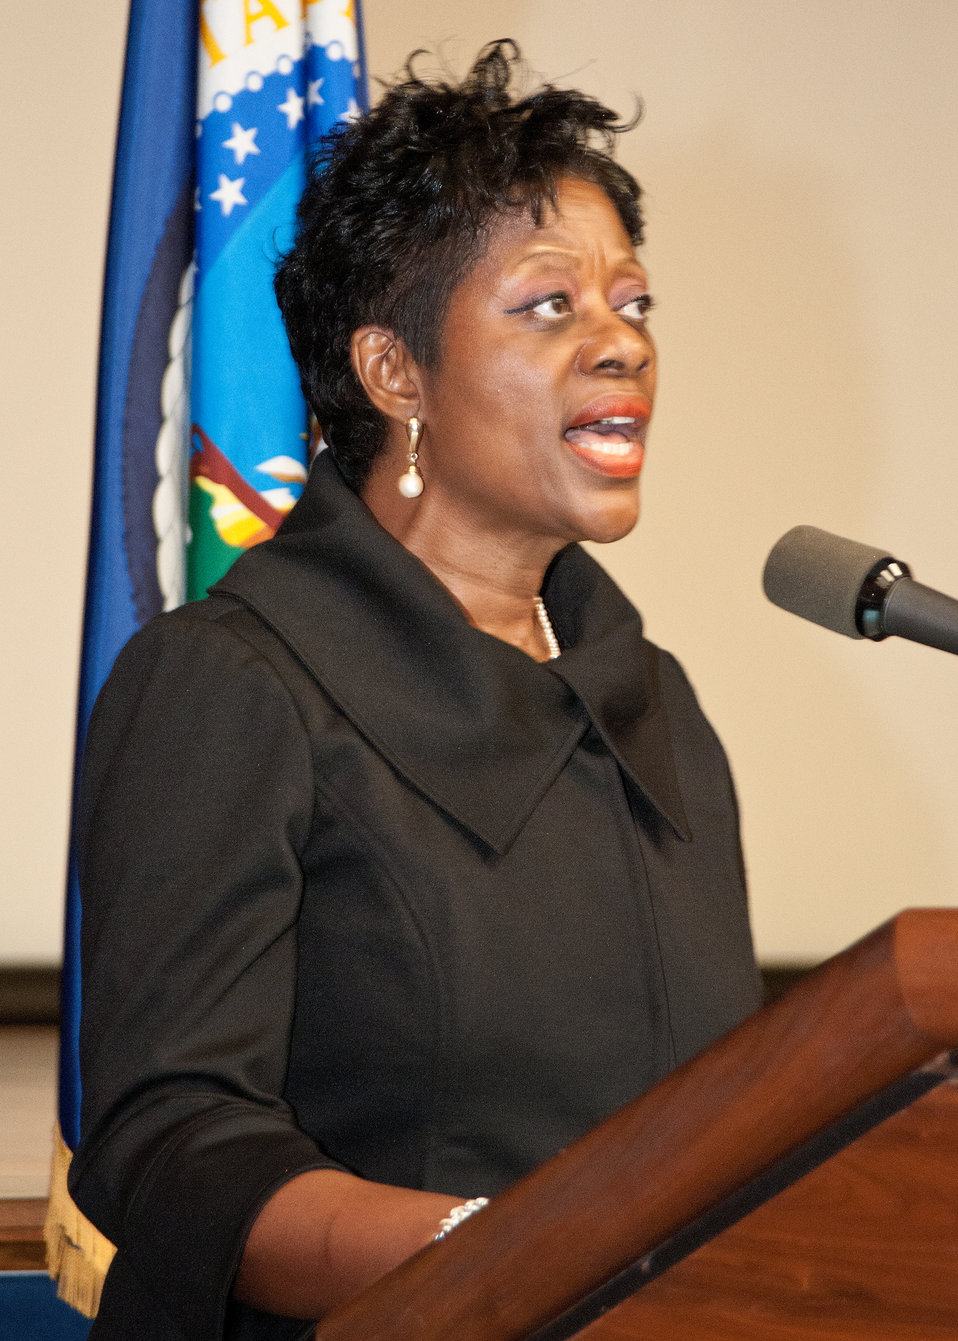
Nanny Hill-Midgett, Rural Development, sings the National Anthem at the Rural Development Celebration of Service held at the United States Department of Agriculture in Washington, DC, on Wednesday, November 16, 2011.